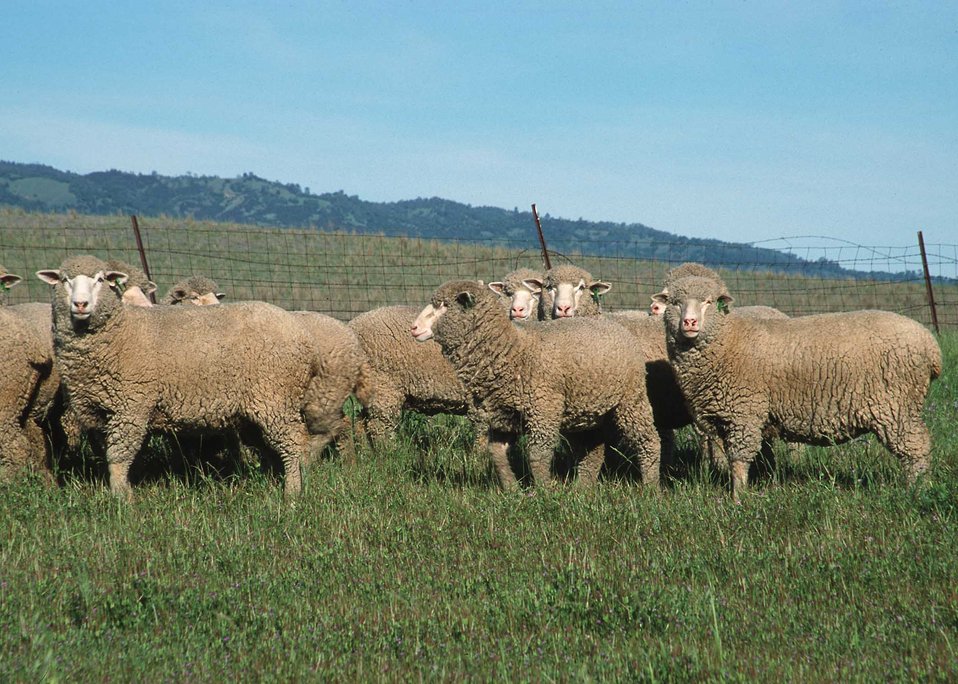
Sheep graze in Yolo County, CA.